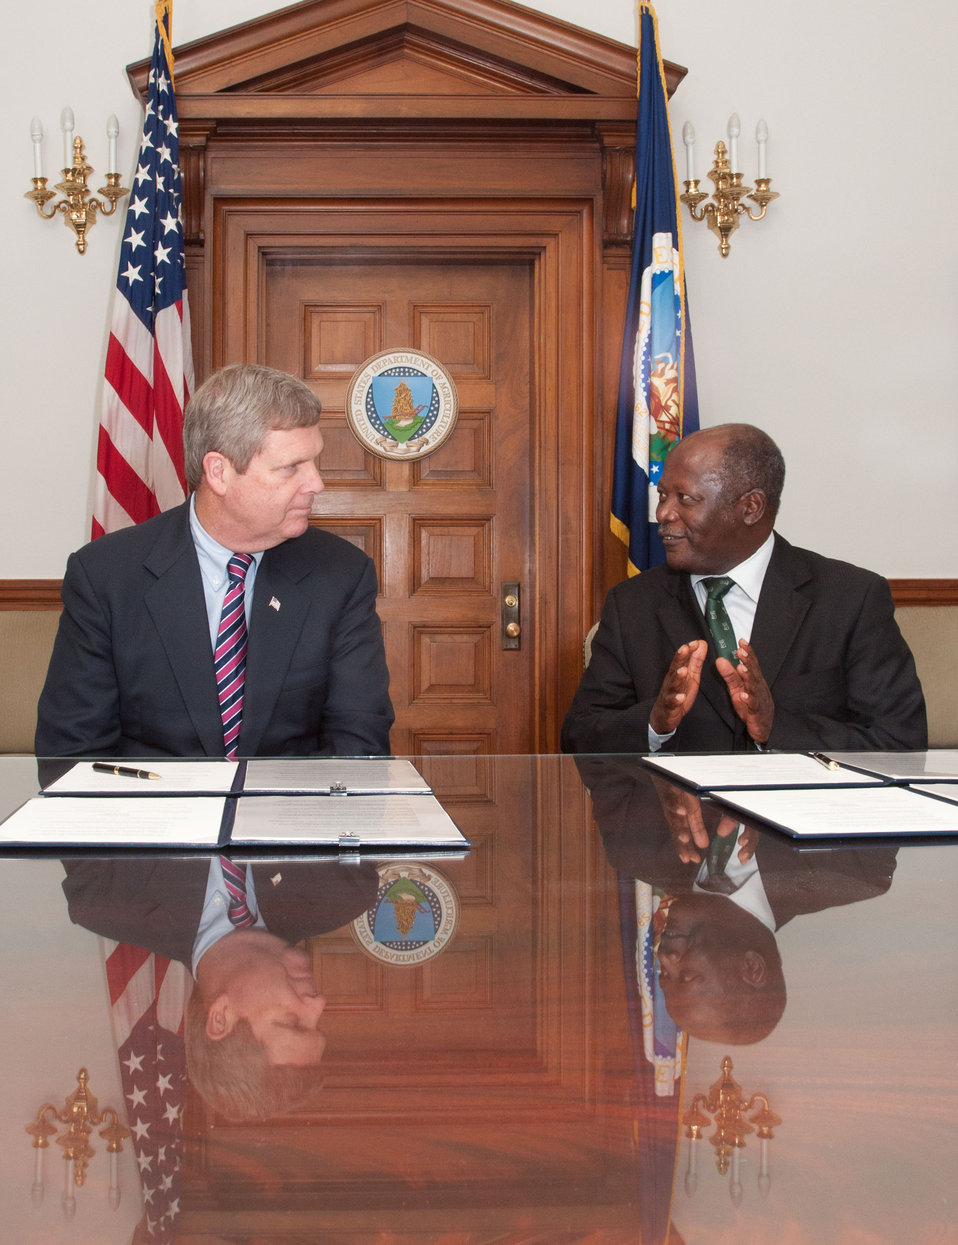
U.S. Department of Agriculture Secretary Tom Vilsack (left) and Alliance for a Green Revolution in Africa (AGRA) President Dr. Namanga Ngongi (right) sign a Memorandum of Understanding in Secretary Vilsack’s office in Washington, DC, on Thursday, May 26, 2011. AGRA’s programs integrate seeds, soils, market access, policy and partnerships and innovative finance. The alliance strives for comprehensive changes across Africa’s agricultural system. Programs also support agricultural education and water management, and the involvement and training of youth.